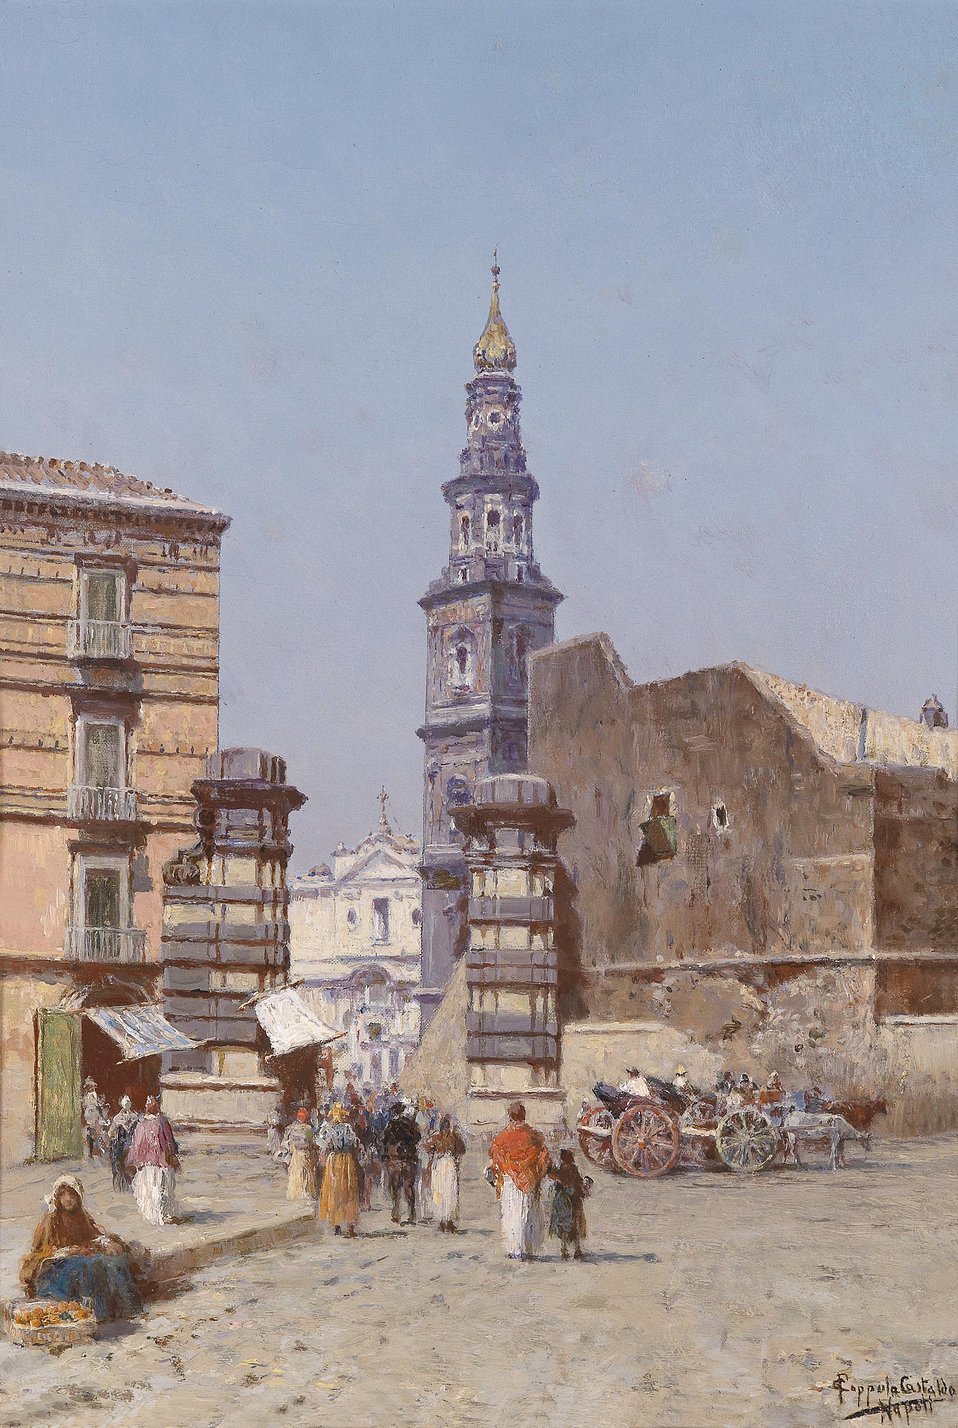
Deutsch: Motiv aus Neapel (?), signiert, bezeichnet FCoppola Castaldo Napoli (Signatur nachgezogen), Öl auf Leinwand, 40 x 28 cm